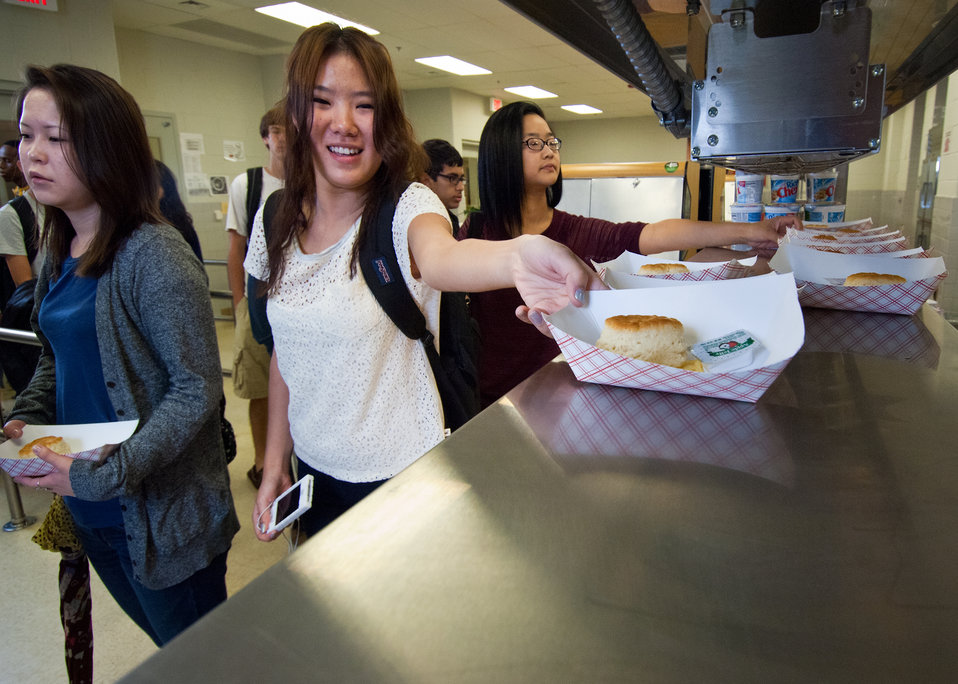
Students at Washington-Lee High School select their breakfast of Scrambled Eggs and Biscuits, on Wednesday, October 19, 2011 prepared by Arlington Public Schools, Food and Nutrition Services. The National School Lunch Program is a federally assisted meal program administered by the United States Department of Agriculture, Food and Nutrition Service operating in public, nonprofit private schools and residential child care institutions. It provides nutritionally balanced, low-cost or free lunches to children each school day.